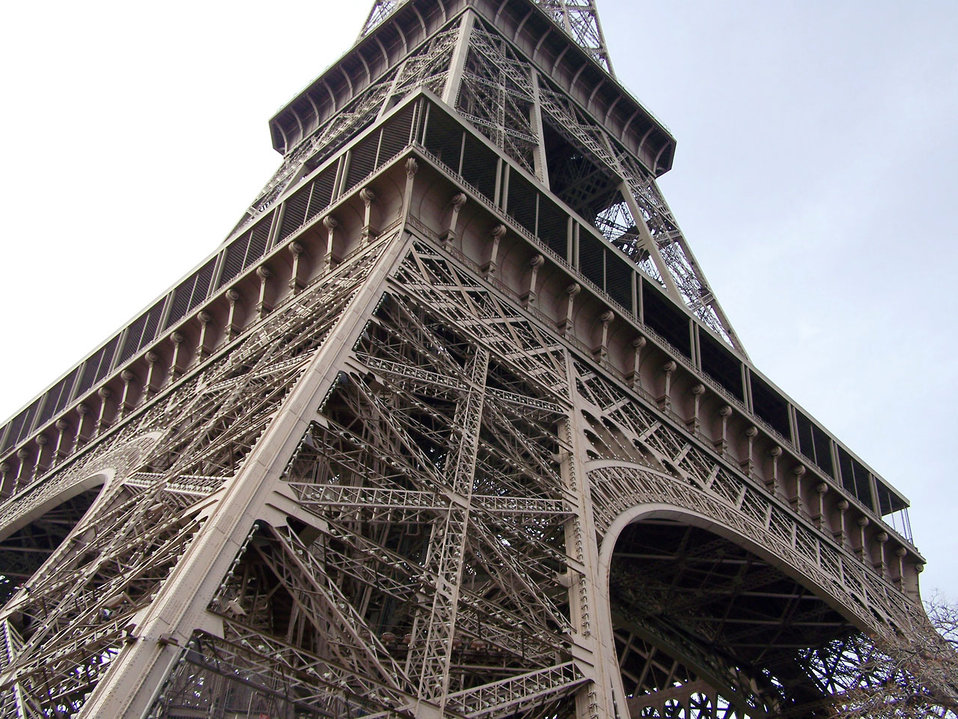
Eiffel tower

View of the eiffel tower, paris france.